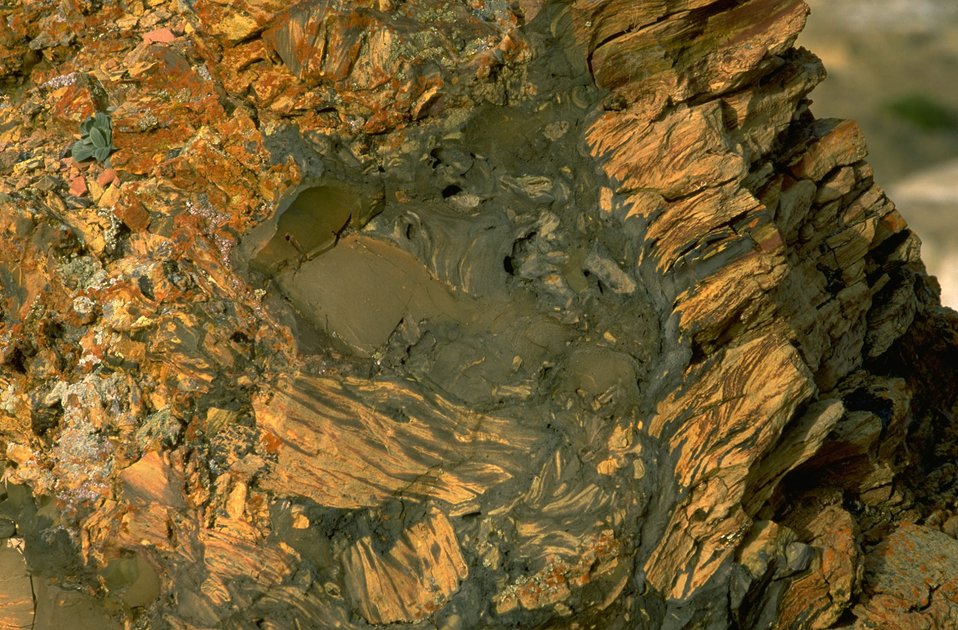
Unusual rock formations on the pillar in the Terry Badlands